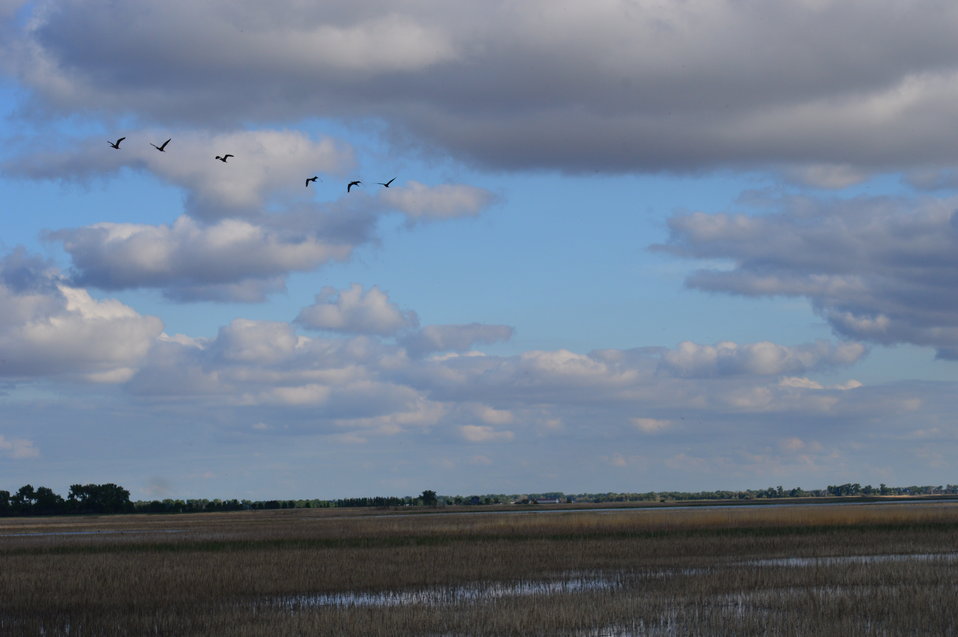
Flock of birds over Sand Lake NWR

Scenery and wildlife at Sand Lake National Wildlife Refuge in South Dakota